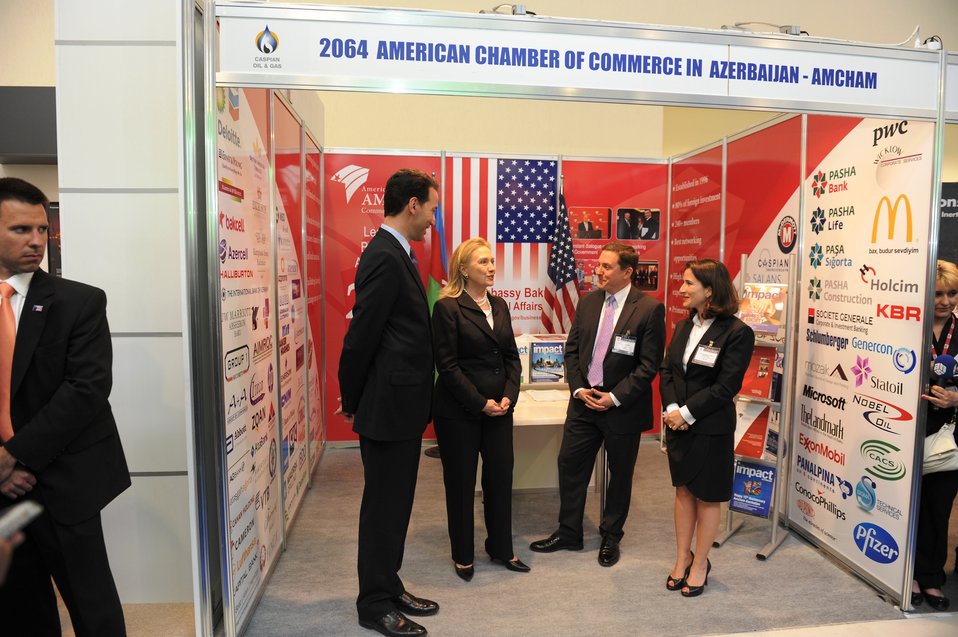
Secretary Clinton Visits the AmCham in Baku

U.S. Secretary of State Hillary Rodham Clinton visits the American Chamber of Commerce in Baku, Azerbaijan, on June 6, 2012.